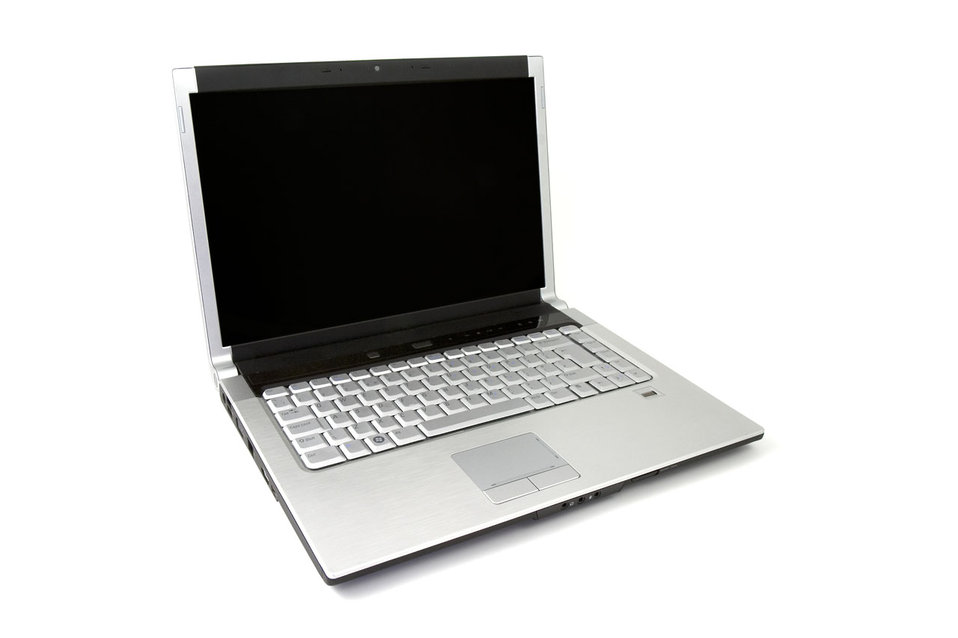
Laptop on white background.